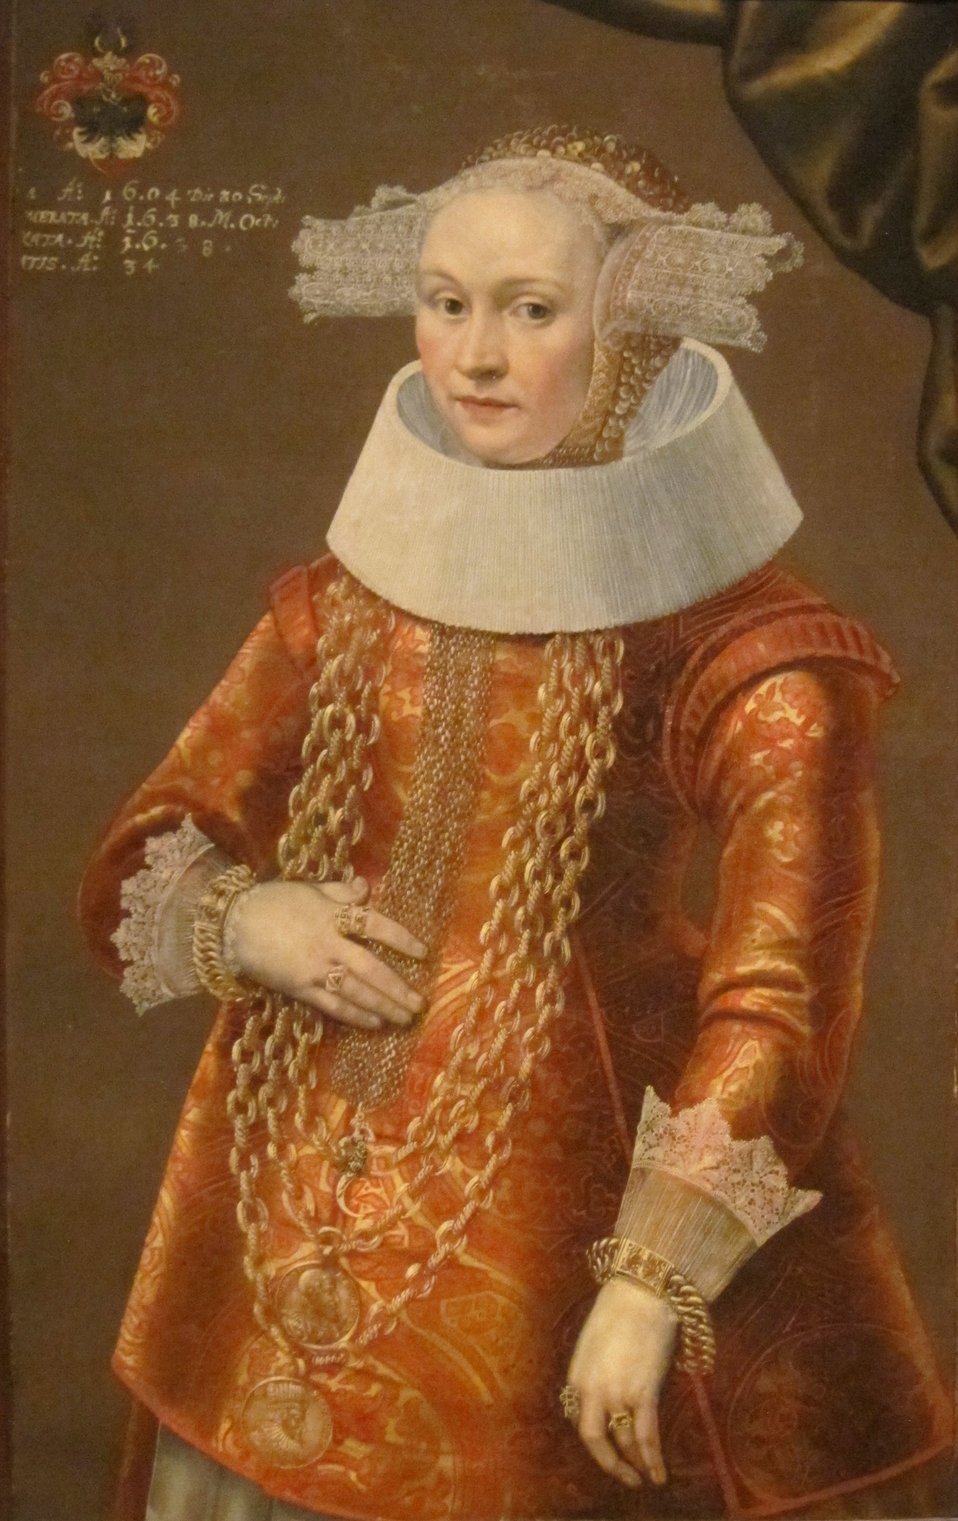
'Portrait of a Daughter of Deiterich Bromsen' by Michael Conrad Hirt, Dayton Art Institute